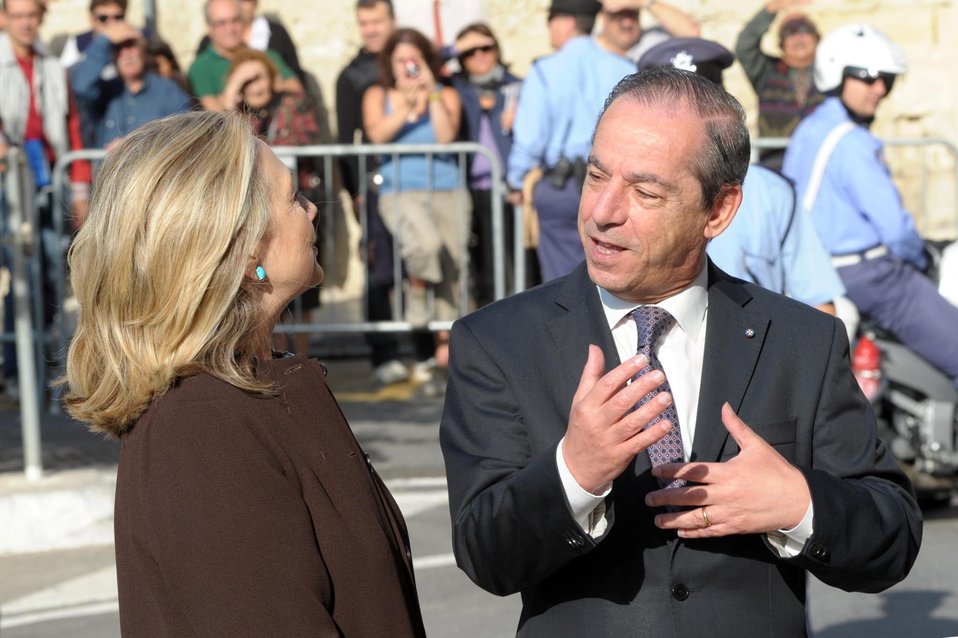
Secretary Clinton Is Greeted By Maltese Prime Minister Gonzi

U.S. Secretary of State Hillary Rodham Clinton is greeted by Maltese Prime Minister Lawrence Gonzi at the Auberge de Castille in Valletta, Malta, on October 18, 2011.